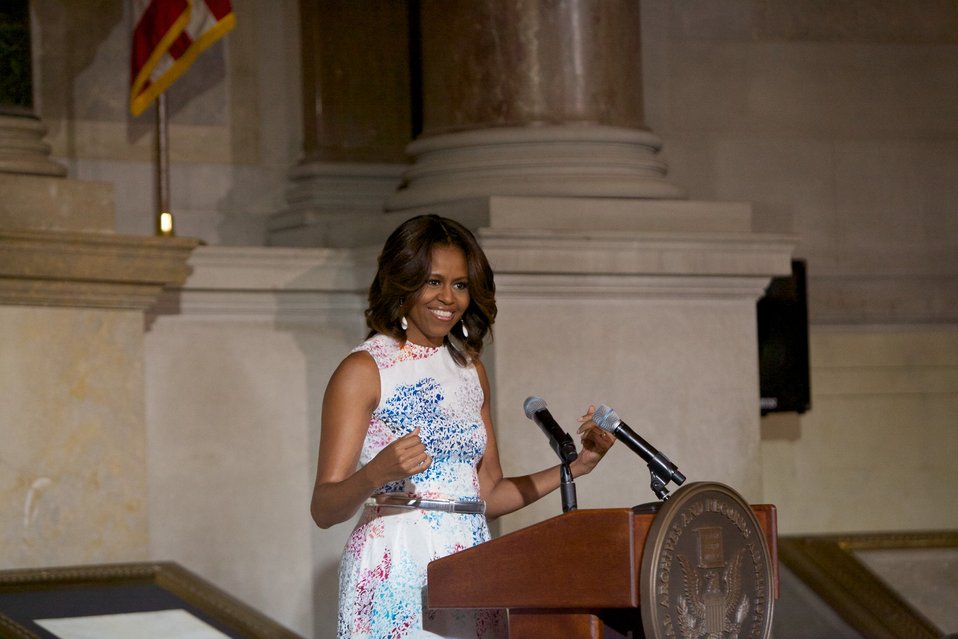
Naturalization Ceremony with Michelle Obama